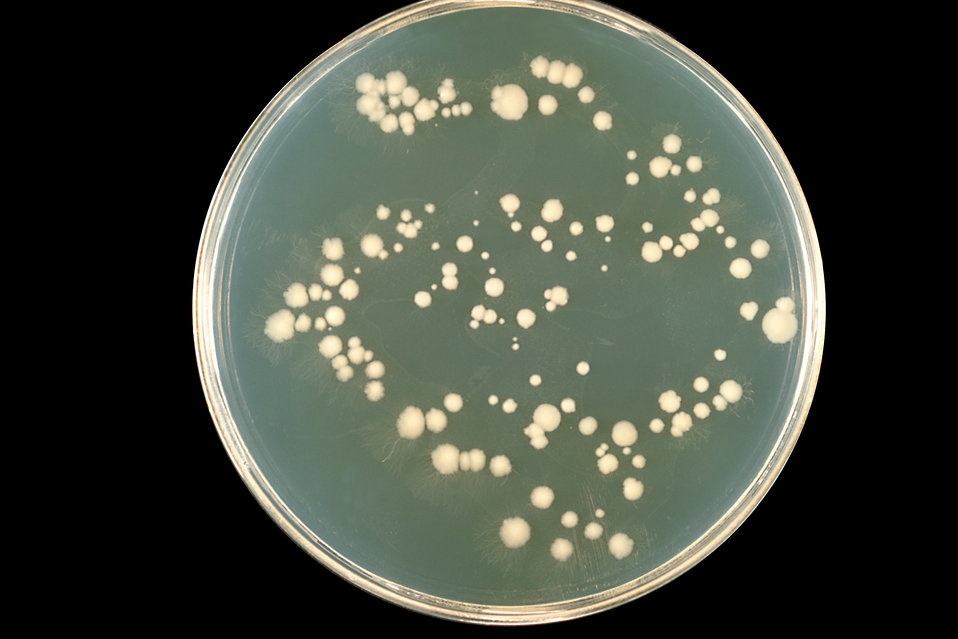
This is a plate culture of the fungus Candida albicans, strain 7H10, grown at 37�C.